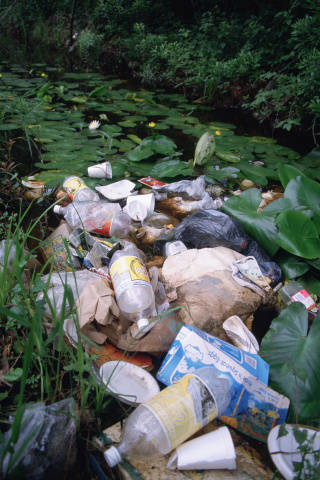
Litter pollution in wetland area

USFWS/Ryan Hagerty

In the context of climate adaptation, non-climate stressors refer to those current or future pressures and impacts threatening species and natural systems that do not stem from climate change, such as habitat fragmentation, invasive species, pollution and contamination, disease, and over exploitation.